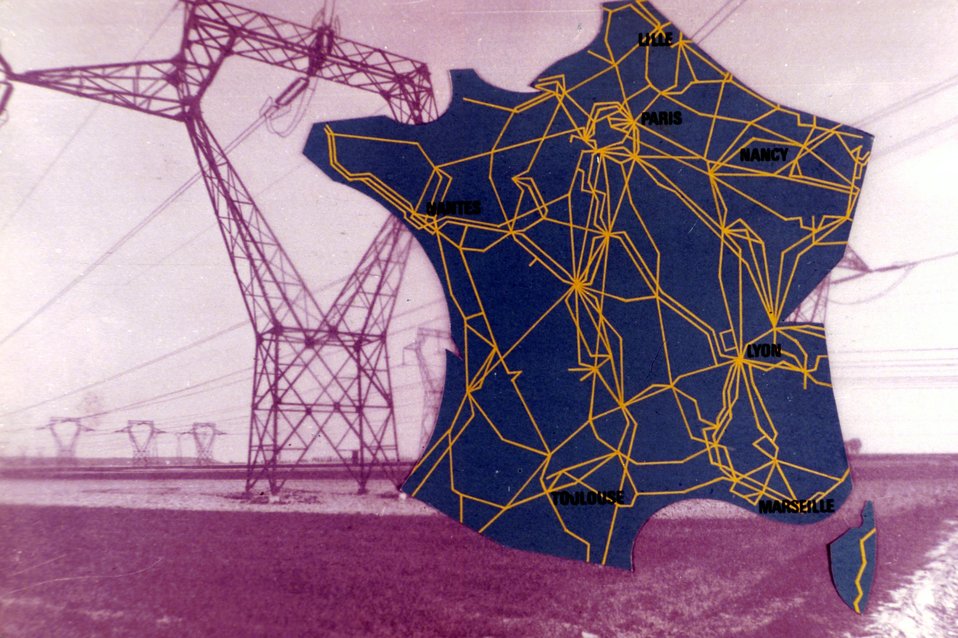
Le rÐseau d'interconnexion.